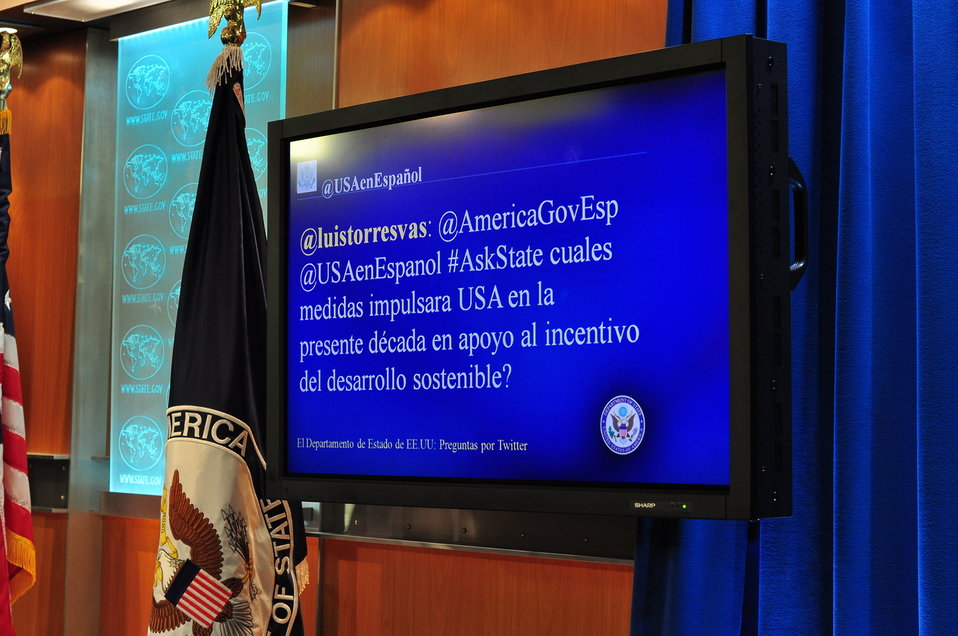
Acting Assistant Secretary Hammer Responds to #AskState Questions in Spanish

Acting Assistant Secretary of State Mike Hammer responds to #AskState questions during the U.S. Department of State's first Twitter Briefing in Spanish in Washington, D.C., on March 1, 2012.